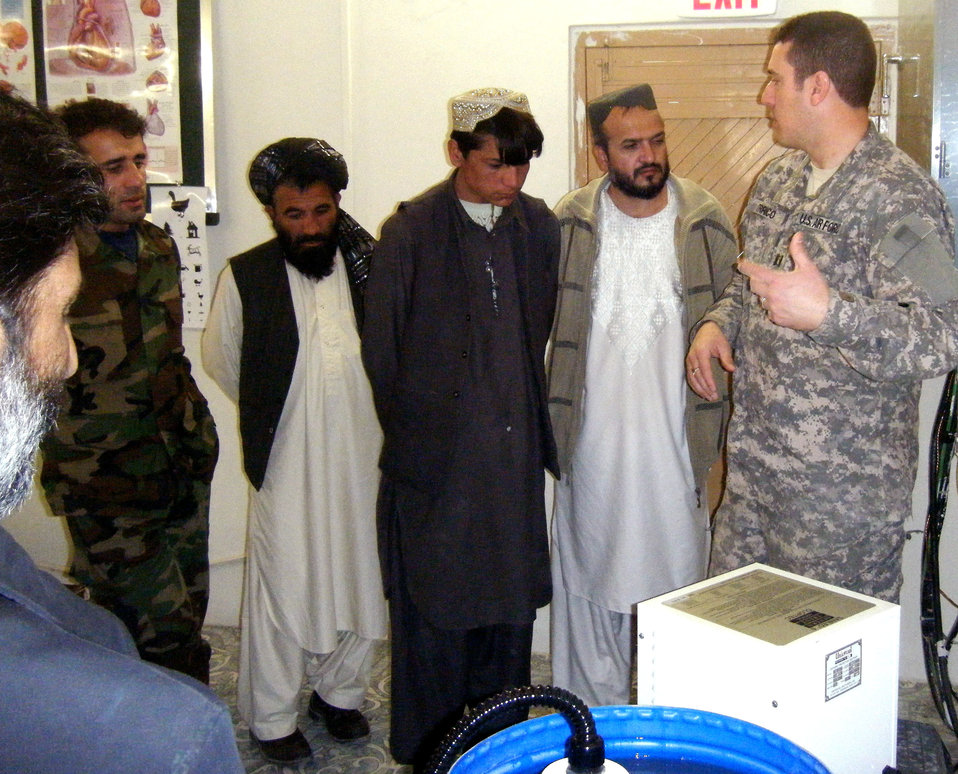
Team combats waterborne illness in Afghan province

Air Force Capt. (Dr.) Bill Errico of the provincial reconstruction team in Afghanistan's Zabul province, shows Iraqi doctors how to use a water purification machine. The PRT medical team donated water purification systems to hospitals throughout the province.